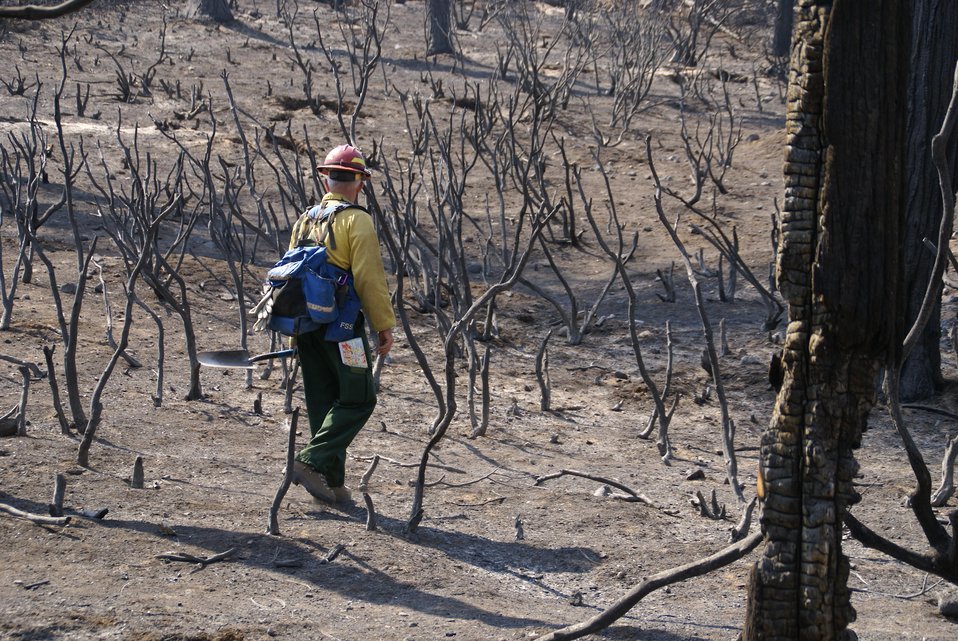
Burned Area Emergency Response (BAER) soil scientist Brad Rust evaluates a burned area on the Rim Fire. BAER teams start work even before the fire is completely extinguished at the Rim Fire. BAER is a rapid assessment of burned watersheds by a BAER team to identify imminent post-wildfire threats to human life and safety property and critical natural or cultural resources on National Forest System lands and take immediate actions to implement emergency stabilization measures before the first major storms. Fires result in loss of vegetation exposure of soil to erosion and increased water runoff that may lead to flooding increased sediment debris flows and damage to critical natural and cultural resources. BAER team members implement seeding and mulching installation to prevent erosion, erect temporary water run-off control structures that will protect recovering areas, and installation of warning signs, replace safety related facilities, remove safety hazards, prevent permanent loss of habitat for threatened and endangered species, and prevent the spread of noxious weeds and protect critical cultural resources. The Rim Fire in the Stanislaus National Forest near in California began on Aug. 17, 2013 and is under investigation. The fire has consumed approximately 256,169 acres and is 84% contained.